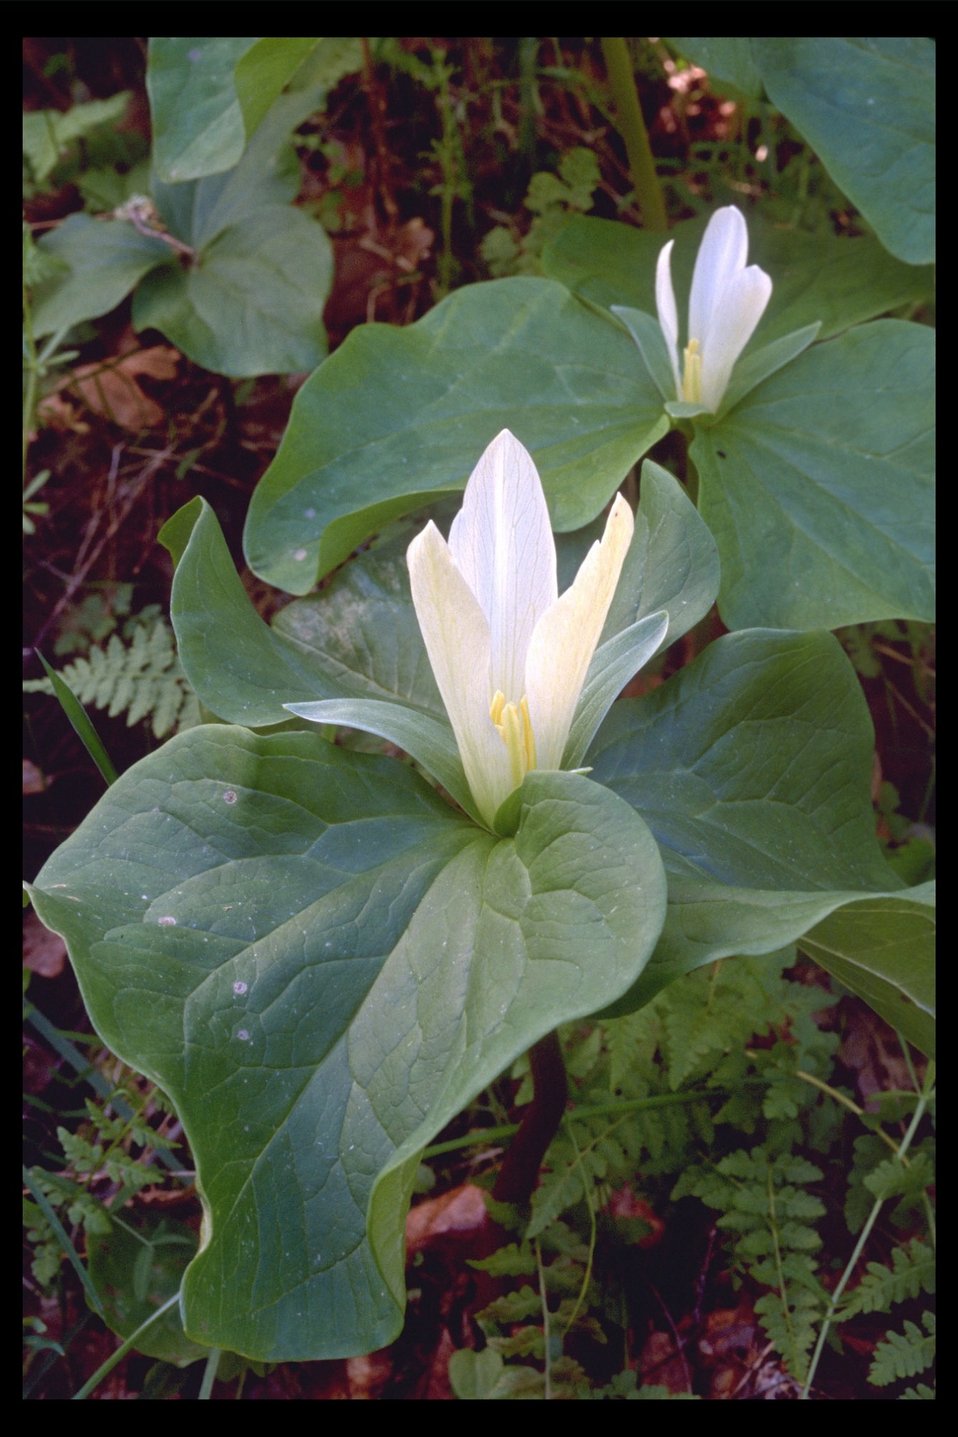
Wake-Robin Trillium (Trillium albidum) in Shady Cove.